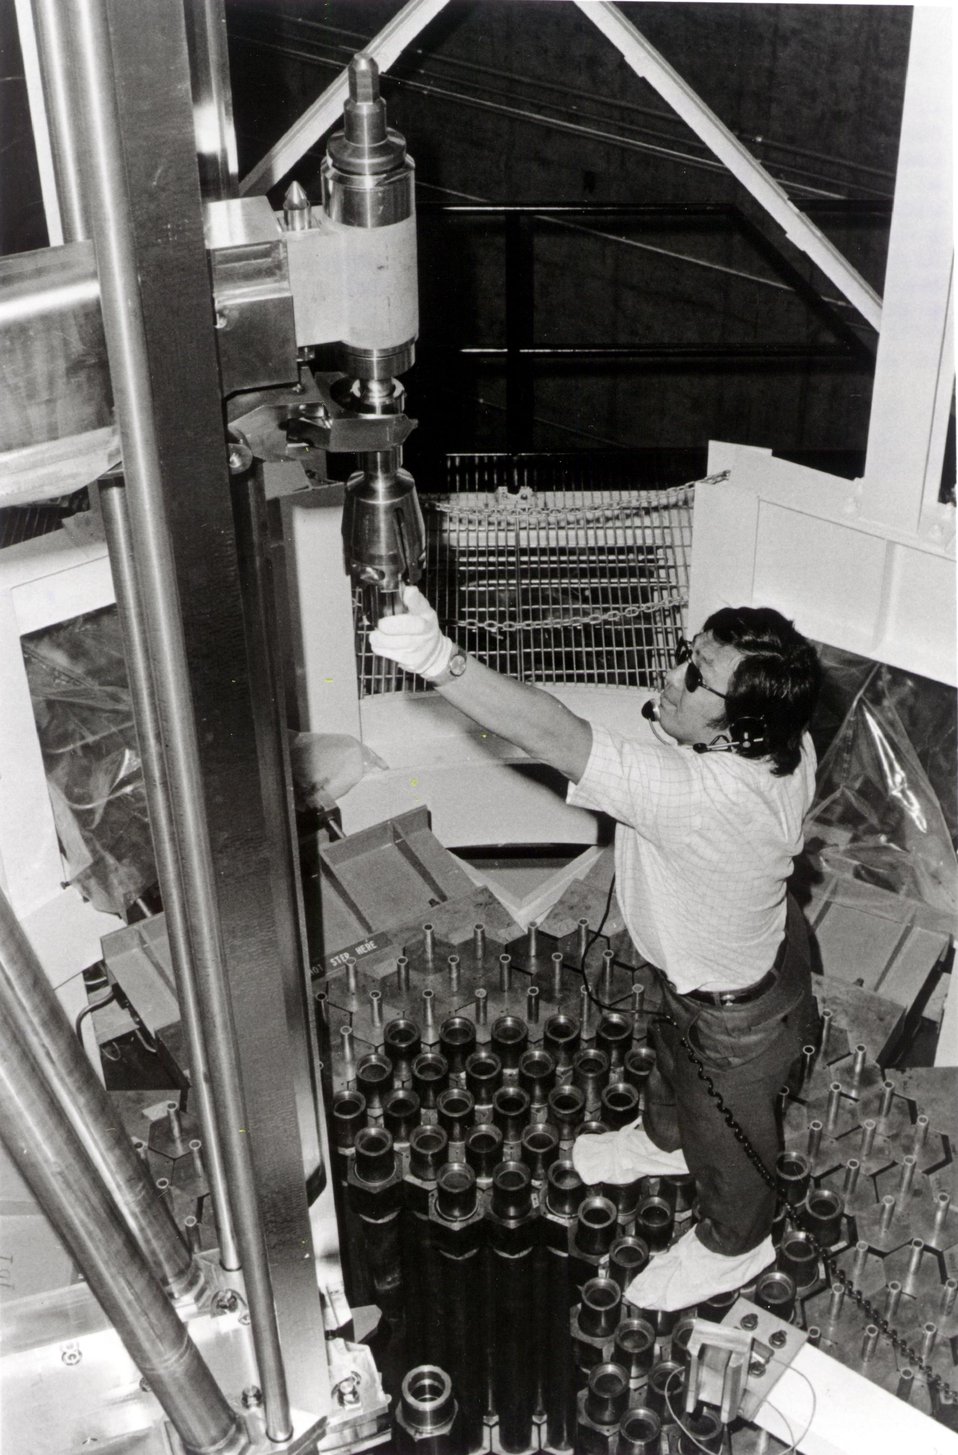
Tad Nashioka stands on the reactor core mockup of the U.S. Atomic Energy Commission's Fast Flux Test Facility (FFTF), during a mechanical clearance test of a fuel bundle handling operation. c. 1974